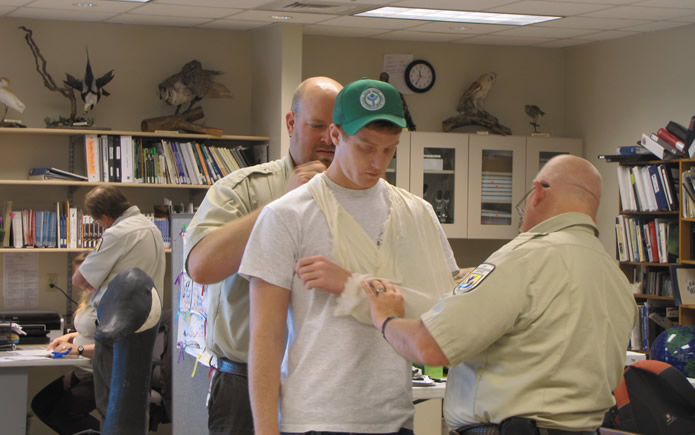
Demonstrating First Aid to Youth Conservation Corps

Bear River Migratory Bird Refuge law enforcement officers demonstrate how to wrap a sling and other First Aid knowledge to Youth Conservation Corps crew. This knowledge is important for the crew to understand their work environment and the possible hazards of the job.